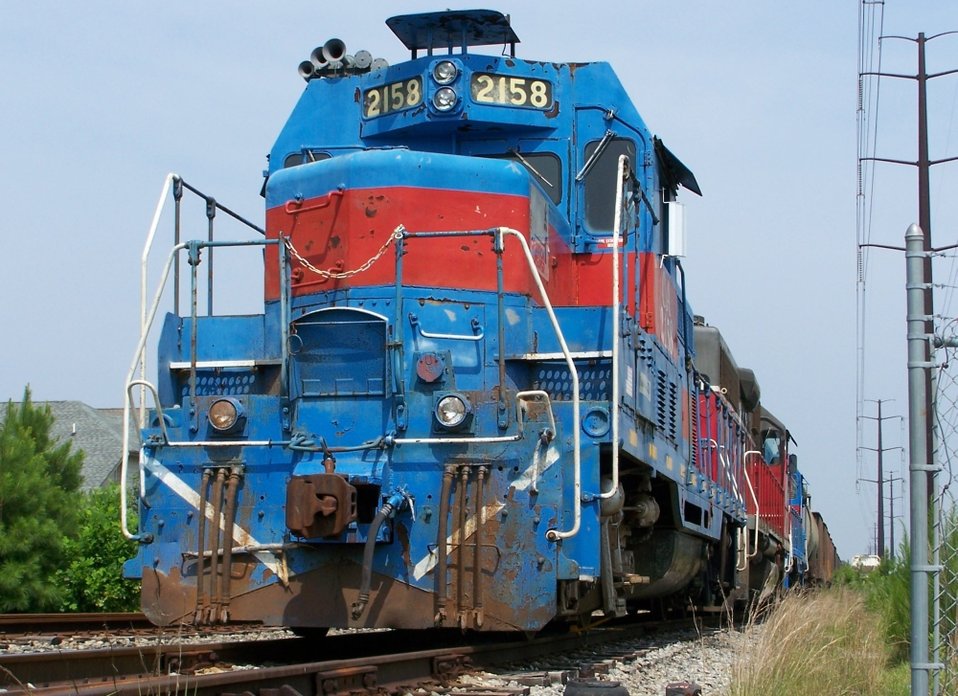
Chesapeake and Albemarle Railroad, 2158 GP7u, Chesapeake, VA.